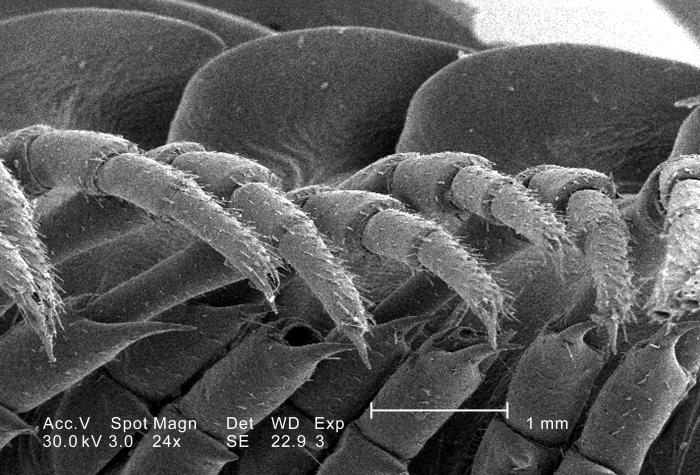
This scanning electron micrograph (SEM) depicted a magnified infero-oblique view of the trunk region of an unidentified millipede found outside on the ground in the Decatur, Georgia suburbs; Magnified 24x. With their 'jointed legs', millipedes are members of the insect Phylum Arthropoda, and the Class Diplopoda.